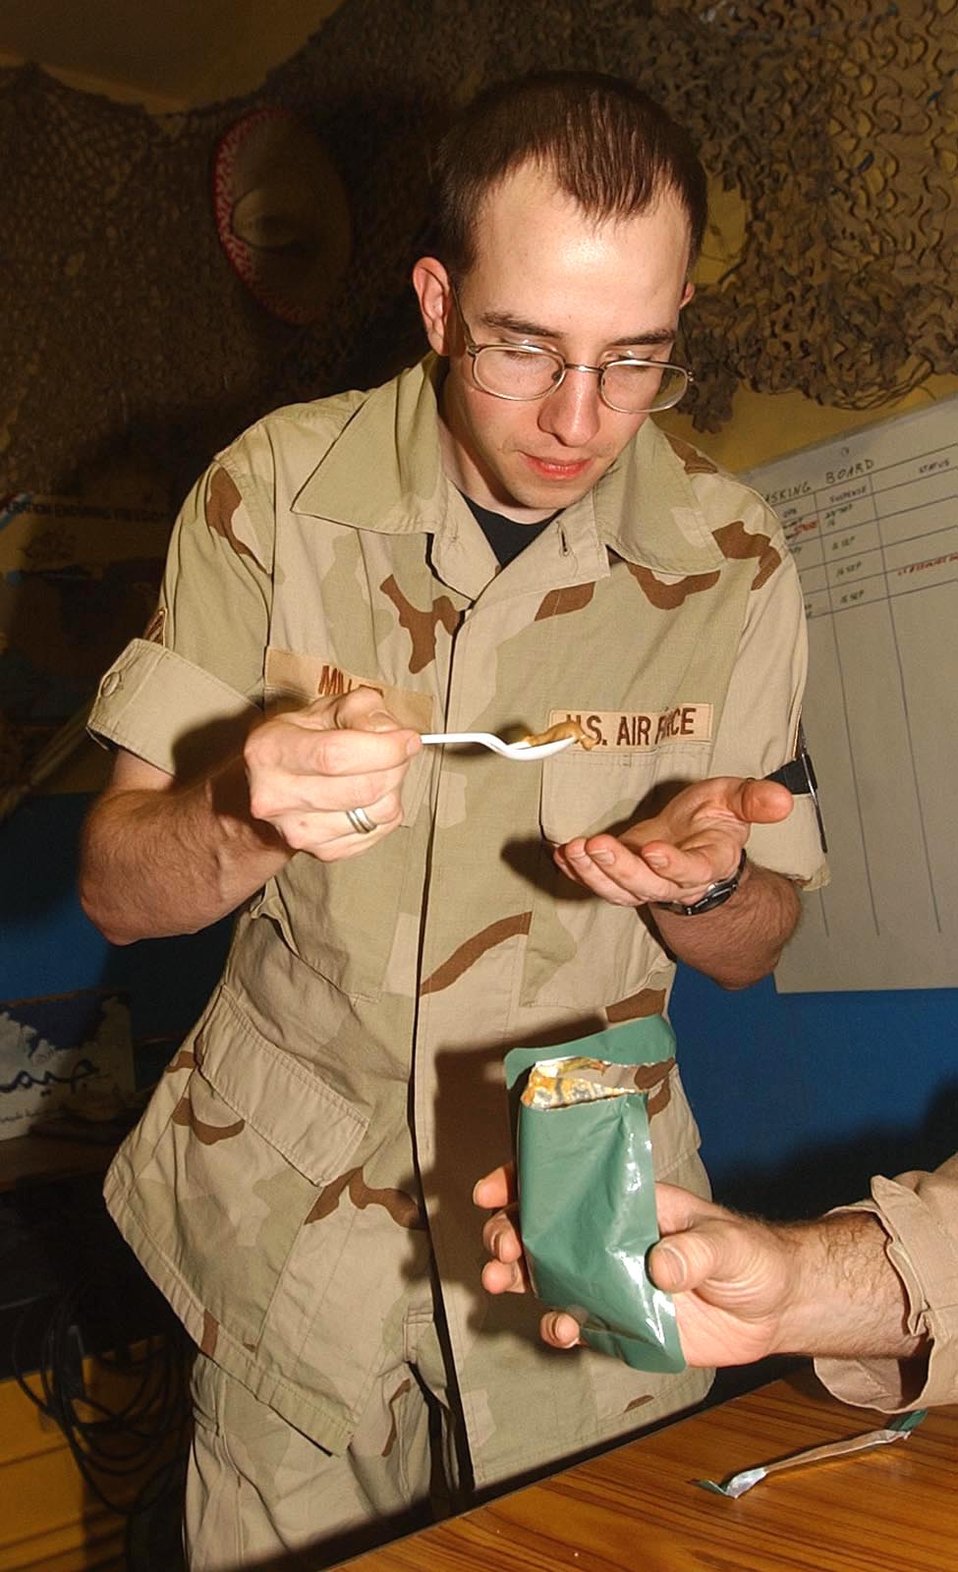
Taste test

BAGRAM AIR BASE, Afghanistan -- Senior Airman Brian Miller prepares to taste-test a Thai ration. His inputs will be collected with others to determine which country has the most preferred meals ready to eat. Miller is assigned to the 455th Expeditionary Operations Group here.